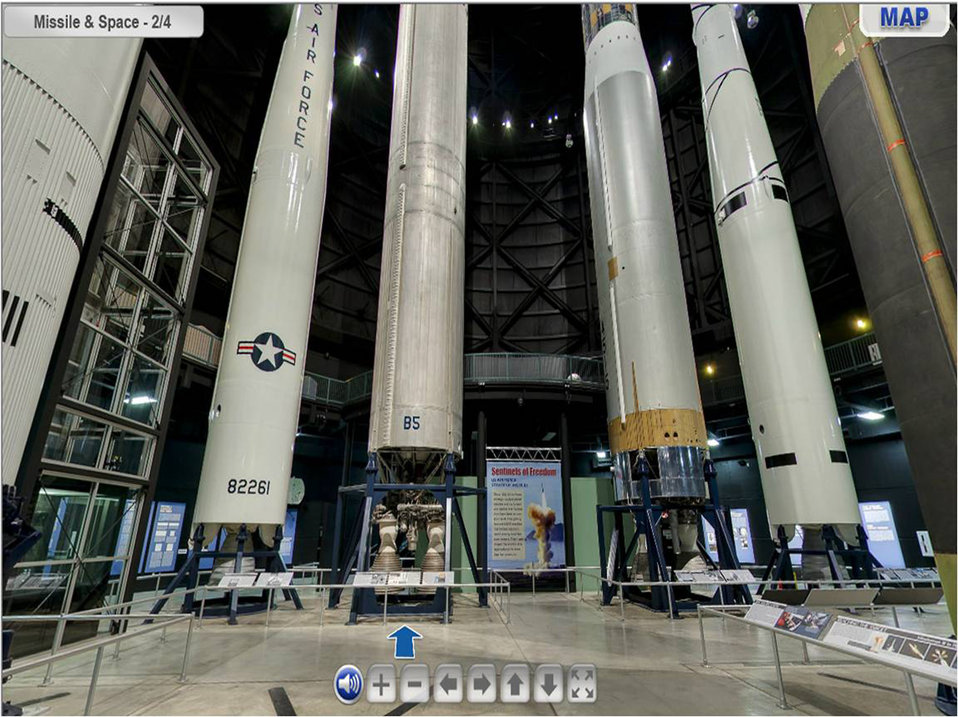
Air Force Museum offers virtual tour

This screenshot shows the Missile and Space Gallery from the National Museum of the U.S. Air Force's Virtual Tour website.